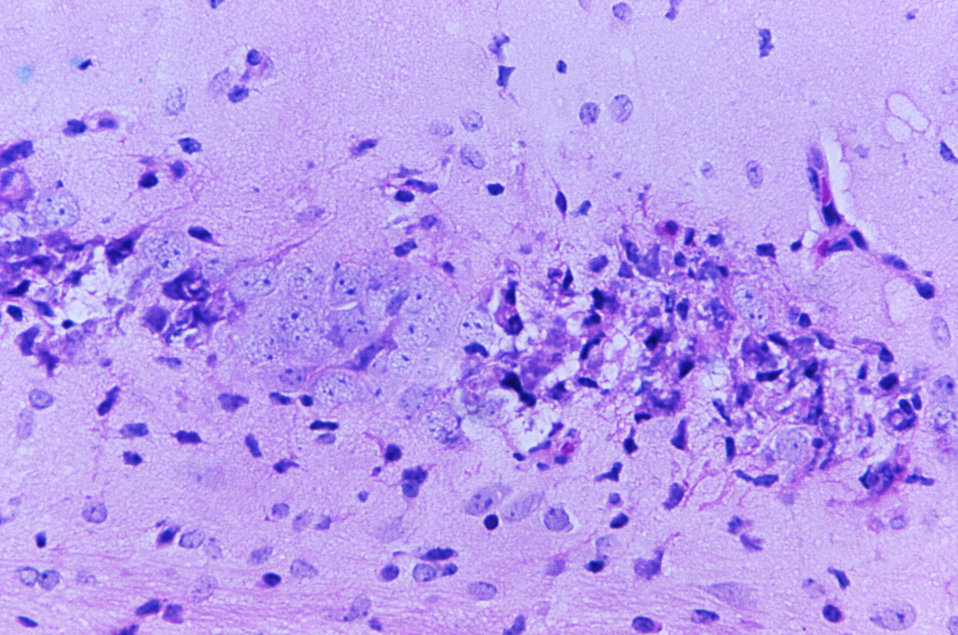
This micrograph reveals the histopathologic changes found in Tamiami virus encephalitis; Mag. 300X.